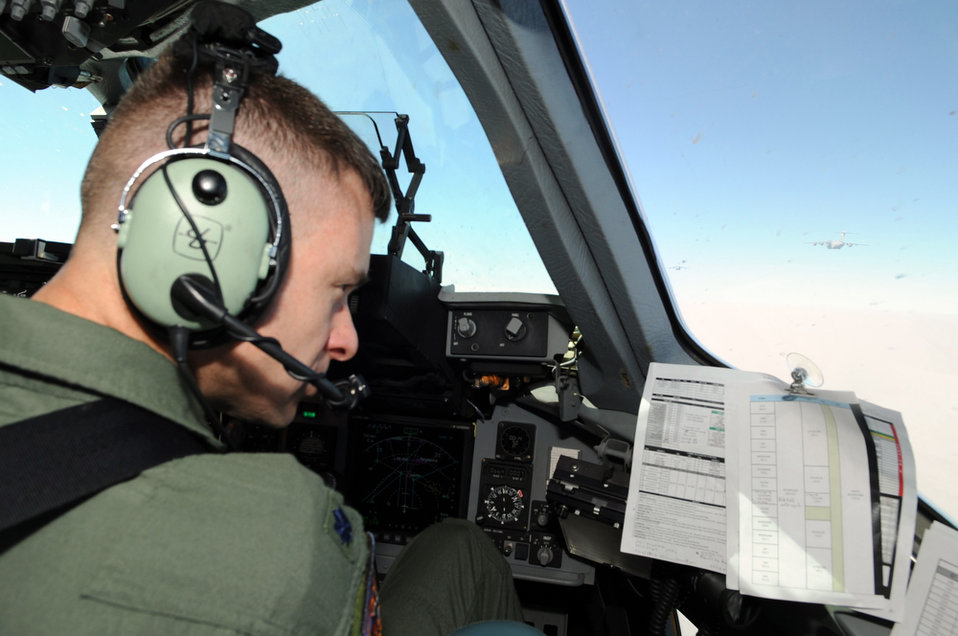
Multi-aircraft mission provides key training in Thailand

Lt. Col. Andy Hird reviews charts while participating in a C-17 Globemaster III three-ship formation as part of Cope Tiger 2010 March 8, 2010, in Thailand. Colonel Hird is the 517th Airlift Squadron commander at Elmendorf Air Force Base, Alaska.